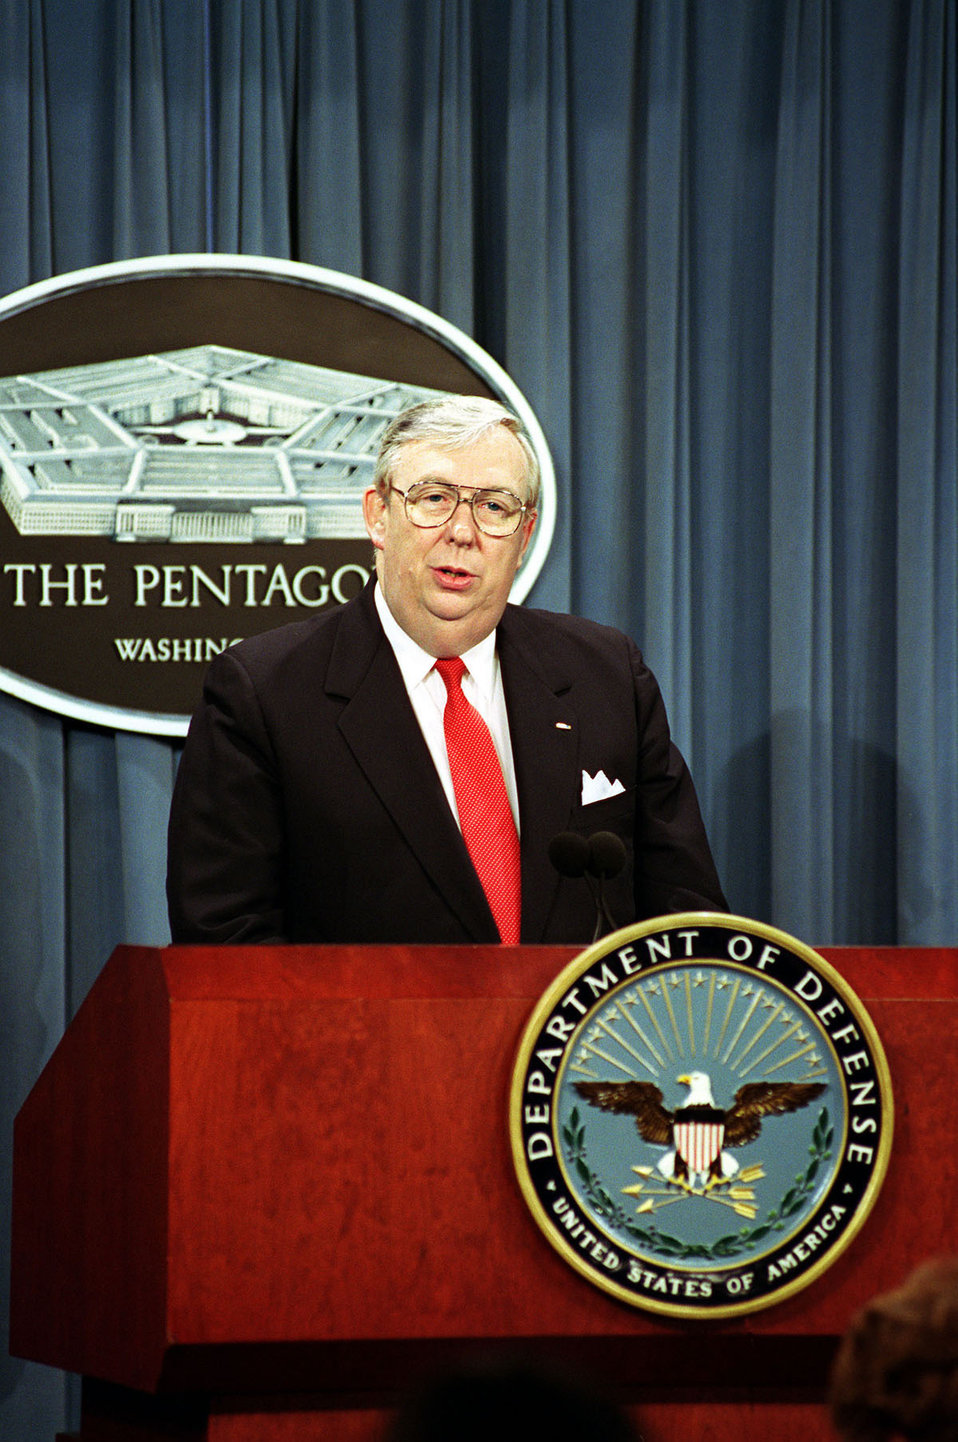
Roche

WASHINGTON -- Secretary of the Air Force James Roche responds to a reporter's question concerning his role in managing the Department of Defense during a Pentagon press briefing on June 18, 2001.